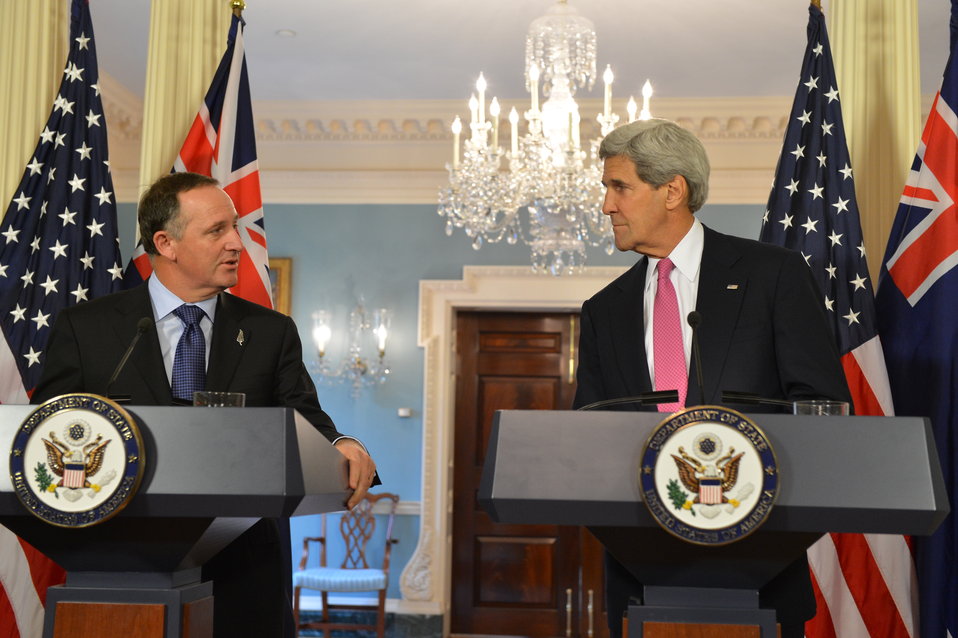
Secretary Kerry Delivers Remarks With New Zealand Prime Minister Key

U.S. Secretary of State John Kerry delivers remarks with New Zealand Prime Minister John Key at the U.S. Department of State in Washington, DC on June 19, 2014.